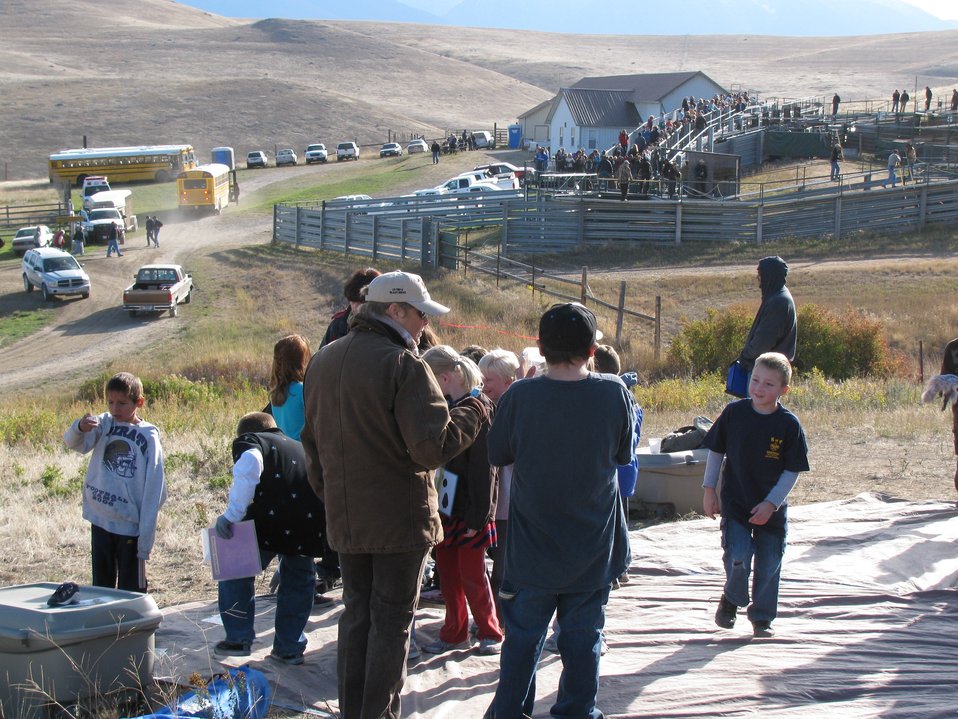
National Bison Range

The Annual Bison Roundup is held each year at the National Bison Range in Montana with activities and fun for all!